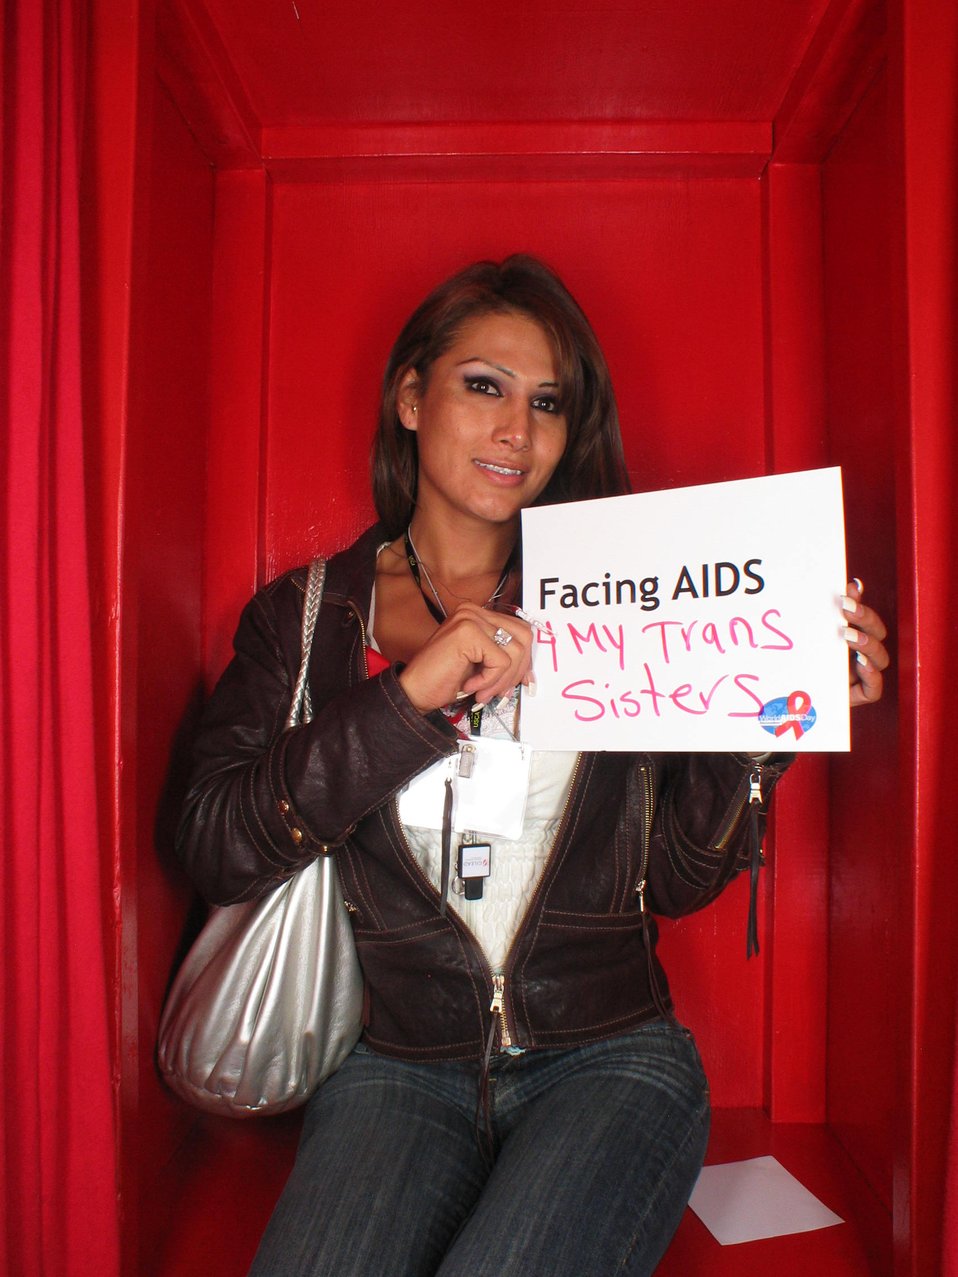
Facing AIDS 4 my trans sisters.